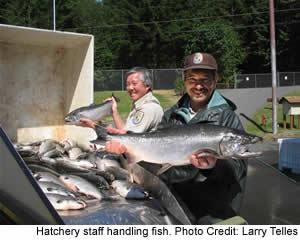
Handling Adult Coho Salmon

A Quilcene National Fish Hatchery employee holds an adult salmon.

Each week the hatchery saves a portion of the adult salmon that return to the hatchery. This ensures that we are getting representation of the whole run of fish and not just a particular return timing of the fish.

There are more adult coho salmon returning to the hatchery than can be raised. The limitation is due to space at the hatchery, water rights, management and budget. These fish were surplussed to the tribes that we partner with for their subsistence program (Tribal trust responsibilities).